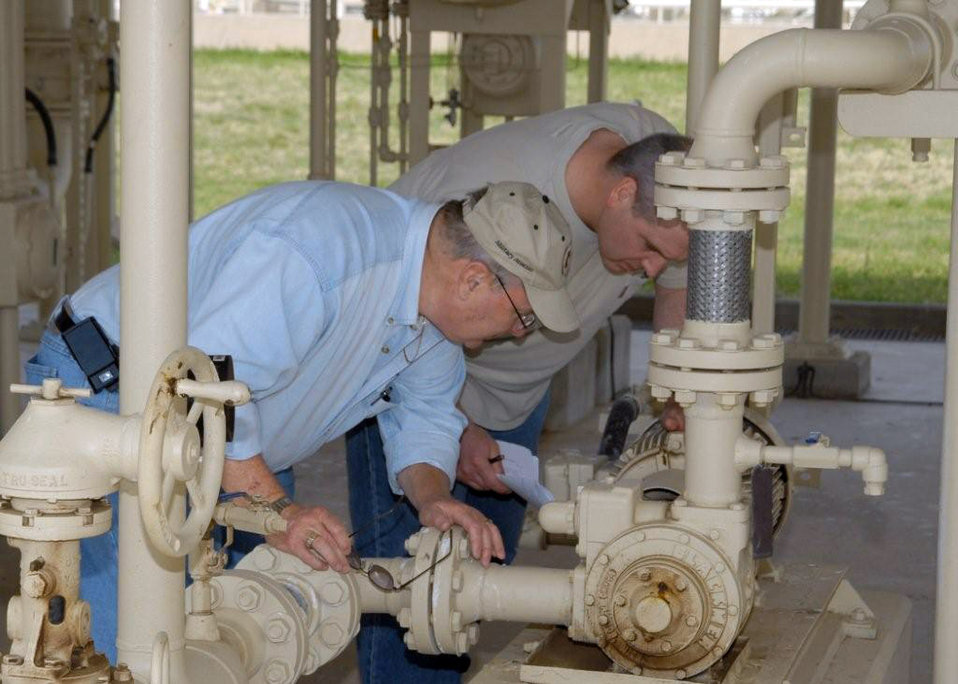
Sheppard officials test synthetic fuels

Tony Fischer and Gerald Soper examine the pipes of the type three hydrant system during a baseline test April 23 at Sheppard Air Force Base, Texas. The test was part of the Air Force's certification of synthetic fuels for the aircraft fleet. Mr. Fischer is with the Air Force Petroleum Agency, and Mr. Soper is from Robert and Company.